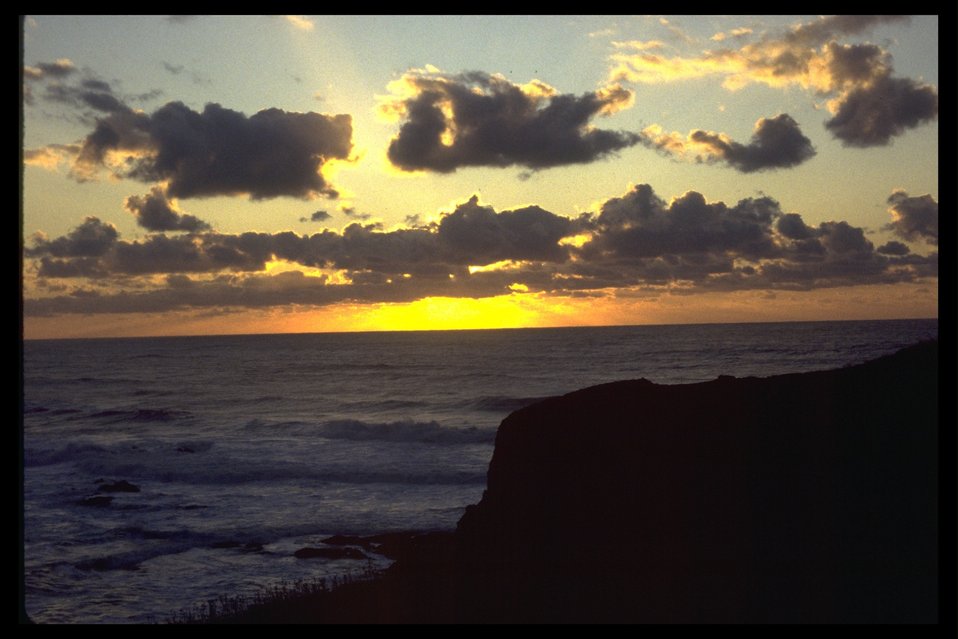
Sunset at cliff near the Yaquina Head Lighthouse.